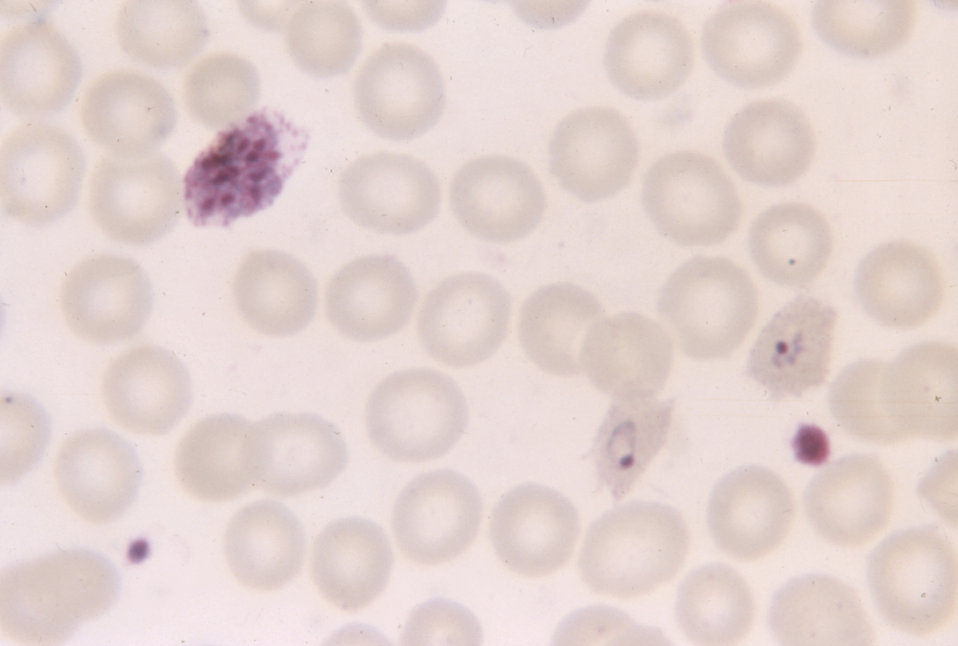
This photomicrograph of P. ovale parasites shows an immature schizont with ten chromatin masses and two rings.